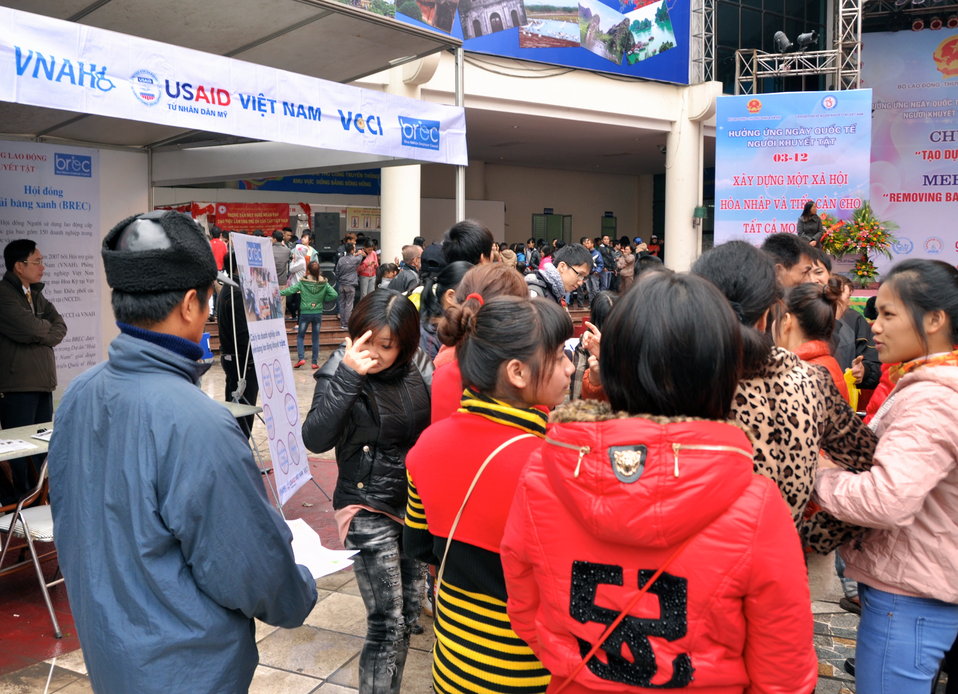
USAID joins celebration of International Day of Persons with Disabilities in Hanoi, Vietnam

December 2, 2012